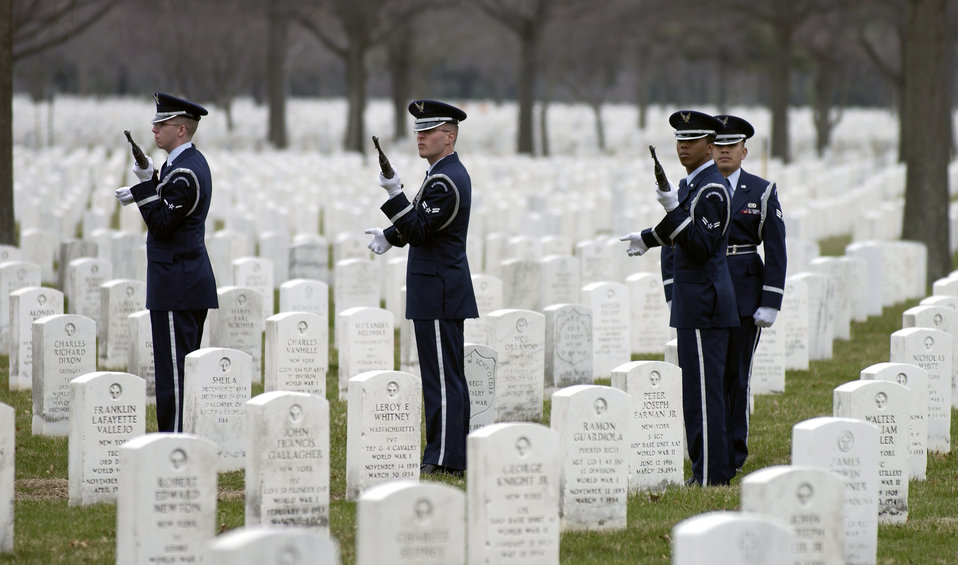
Memorial Day

LONG ISLAND, N.Y -- Honor guard members from the 305th Air Mobility Wing at McGuire Air Force Base, N.J., honor a fallen Airman. The nation observes Memorial Day on May 31 to remember and reflect on the selfless sacrifices of America's armed forces.